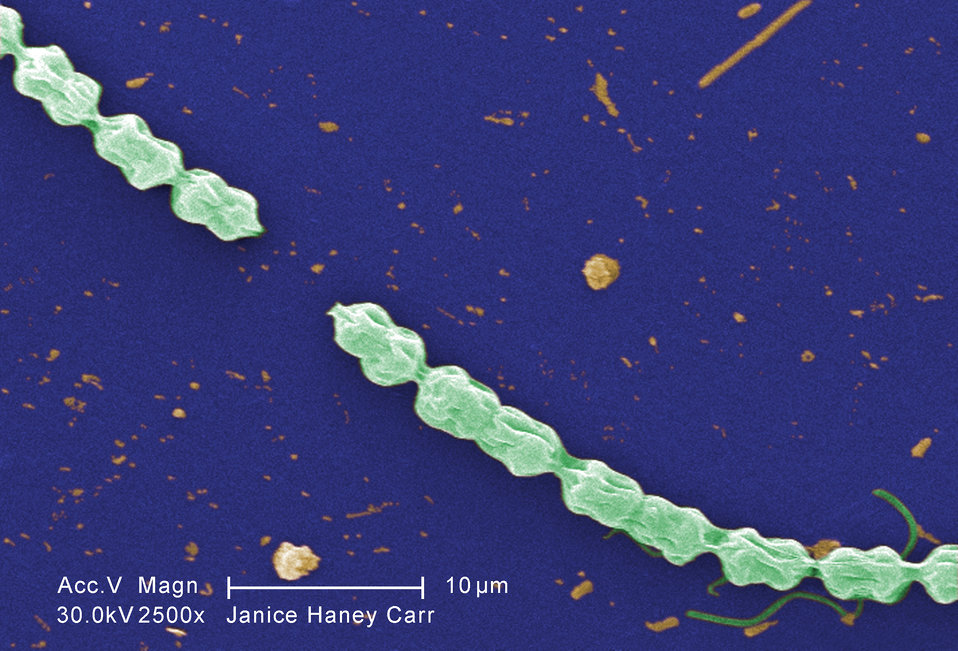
This digitally-colorized scanning electron micrograph (SEM) of an untreated water specimen extracted from a wild stream mainly used to control flooding during inclement weather, revealed the presence of unidentified organisms, which included bacteria, protozoa, and algae. In this particular image, a filamentous chain of what appears to be a specie of green aglae known as Bulbochaete. Note what appeared to be one of this specie's characteristic 'hair cells' on the right. The wrinkled appearance of this specimen may have been artifactual, brought on by having been processed prior to its examination under the electron microscope.